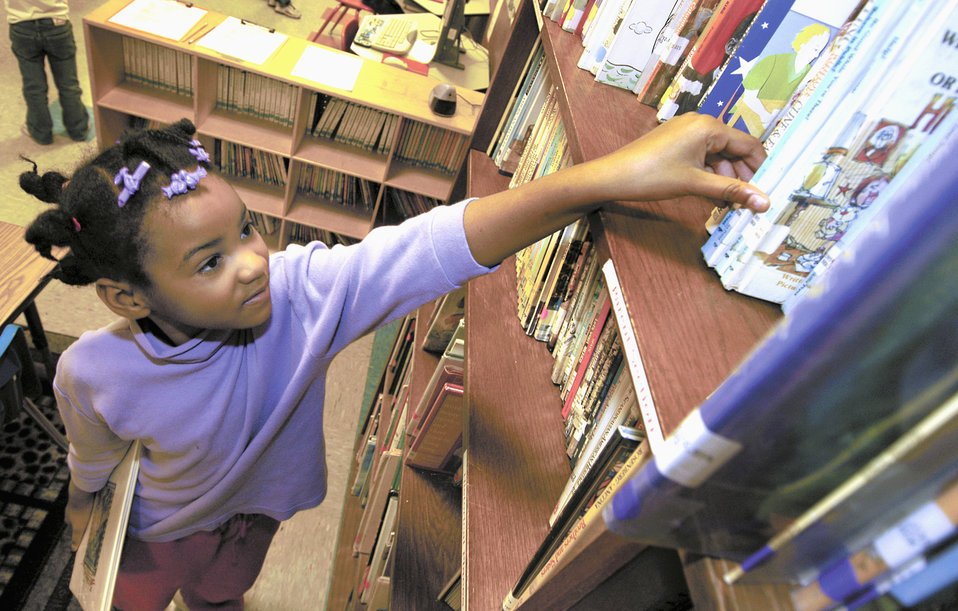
Participation puts more books on library shelves

TINKER AIR FORCE BASE, Okla. -- Lareign Murphy, 6, loves to read and admits she likes Dr. Seuss stories the best. With high participation levels, young readers helped the youth center here earn new books.